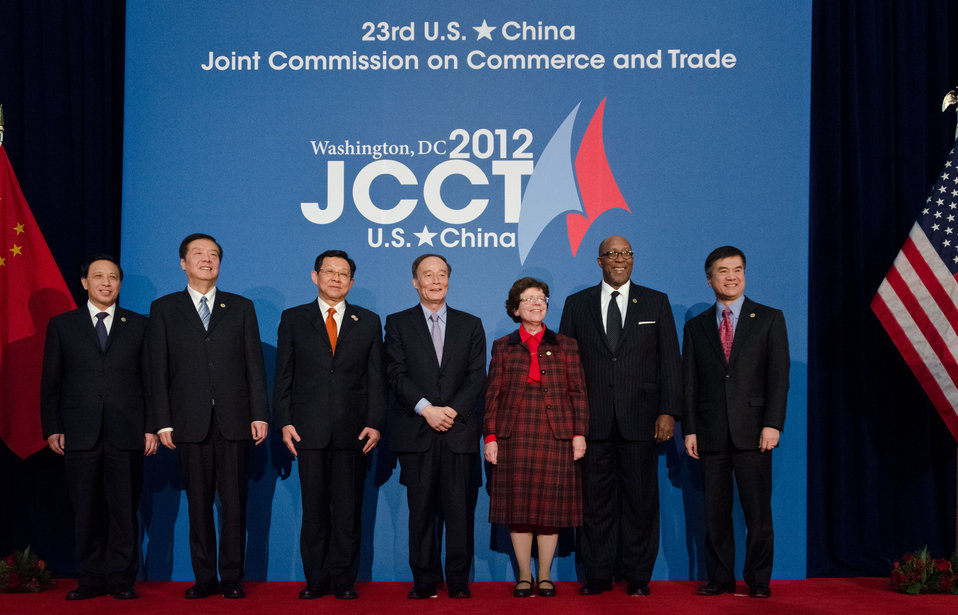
The principal leaders from the Chinese delegates and U.S. hosts, (L to R) China’s Ambassador to the U.S. Zhang Yesui, Vice Minister of Industry and Information Technology Liu Lihua, Chinese Minister of Commerce Chen Deming, Chinese Vice Premier Wang Qishan, Acting U. S. Commerce Secretary Rebecca Blank, U.S. Trade Representative Ron Kirk and U.S. Ambassador to China Gary Locke at the 23rd Session of the U.S. China Joint Commission on Commerce and Trade (JCCT) at the Andrew W. Mellon Auditorium in Washington, D.C. on Wednesday, December 19, 2012. The JCCT holds high-level plenary meetings on an annual basis to review progress made by working groups that focus on a wide variety of trade issues. These working groups meet throughout the year to address topics such as intellectual property rights, agriculture, pharmaceuticals and medical devices, information technology, tourism, commercial law, environment, and statistics. Established in 1983, the JCCT is the main forum for addressing bilateral trade issues and promoting commercial opportunities between the United States and China. The 2011 JCCT meeting was held in Chengdu, China, where China agreed, among other issues, to improve intellectual property enforcement, delink innovation policies to government procurement preferences, and provide a fair and level playing field in China’s Strategic Emerging Industries.